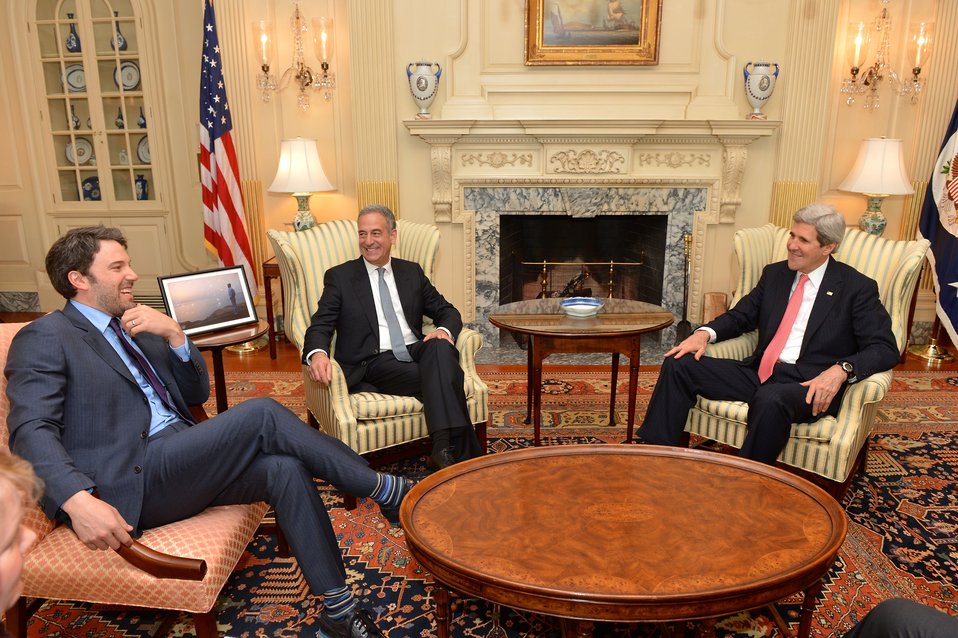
Secretary Kerry Meets With Ben Affleck

U.S. Secretary of State John Kerry and Special Envoy for the Great Lakes Region of Africa and the Democratic Republic of the Congo Russ Feingold meet with Ben Affleck, Founder of the Eastern Congo Initiative, at the U.S. Department of State in Washington, D.C., on February 26, 2014.